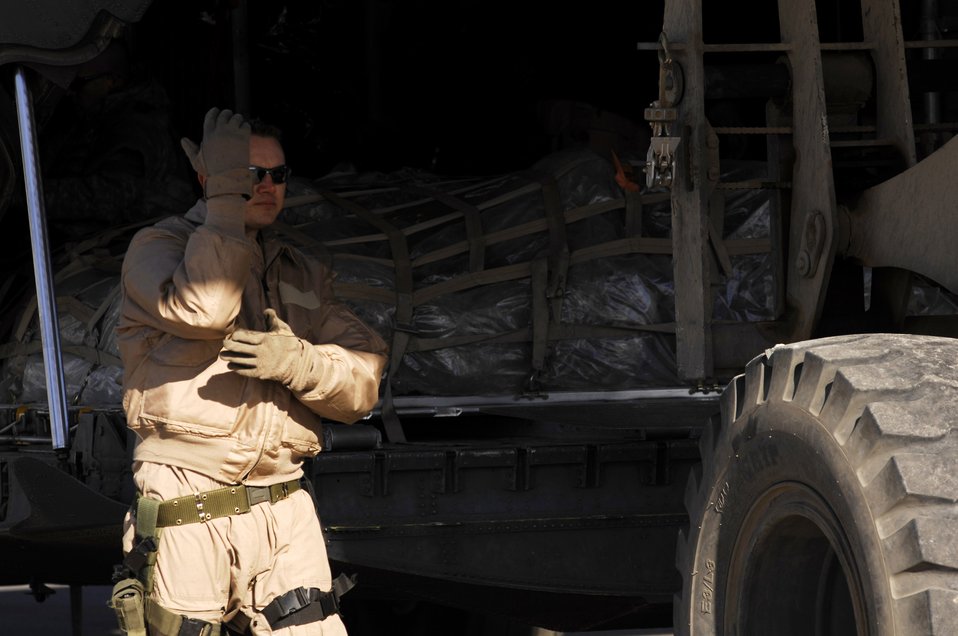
Airmen take Soldiers to the battlefield

Senior Airman Kenny Harmon marshals a cargo pallet unto a C-130 Hercules Feb. 4 at a Southwest Asia air base. Airman Harmon, a 737th Expeditionary Airlift Squadron C-130 loadmaster, is deployed in support of operations Enduring Freedom and Iraqi Freedom and a part of his duties as loadmaster is to ensure the safety of members on board the aircraft while being transported throughout the area of responsibility.